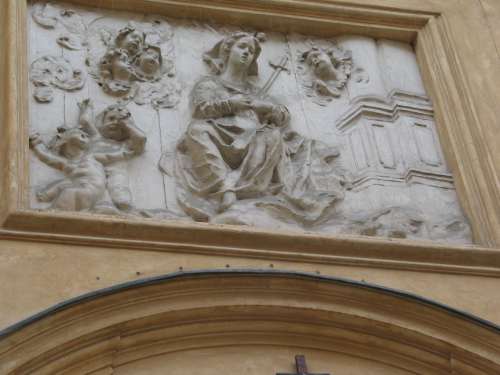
Ozdoba znad wejścia do kościoła św. Marcina w Warszawie - zdjecie własne, zbliżenie płaskorzeźby Dixi